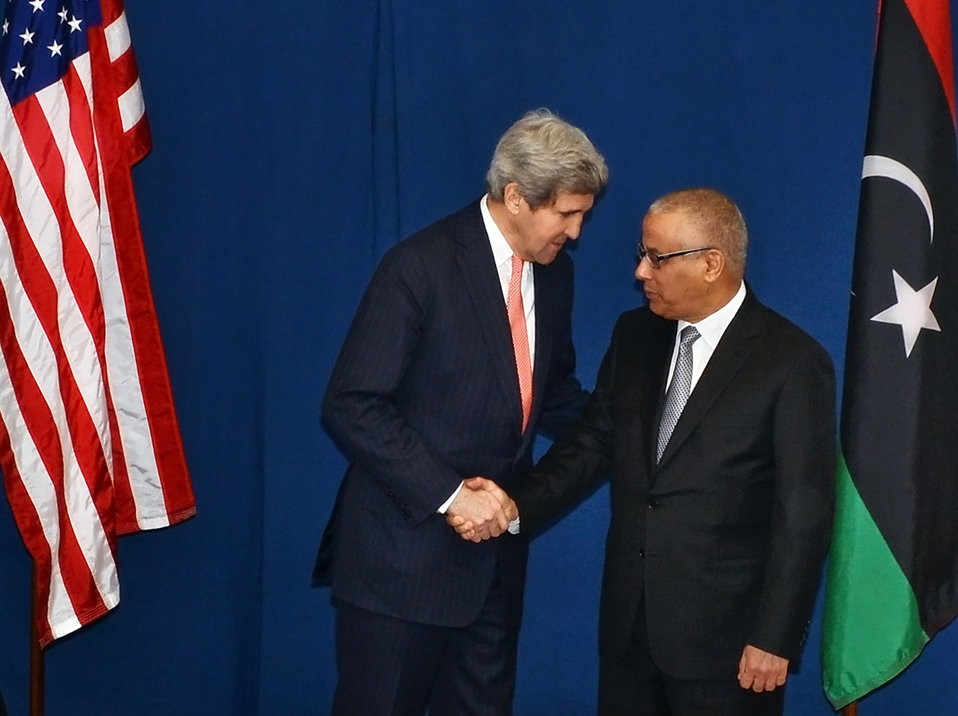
Secretary Kerry Meets With Libyan Prime Minister Zeidan

U.S. Secretary of State John Kerry shakes hands with Libyan Prime Minister Ali Zeidan during the Rome Ministerial Conference on Libya in Rome, Italy on March 6, 2014.